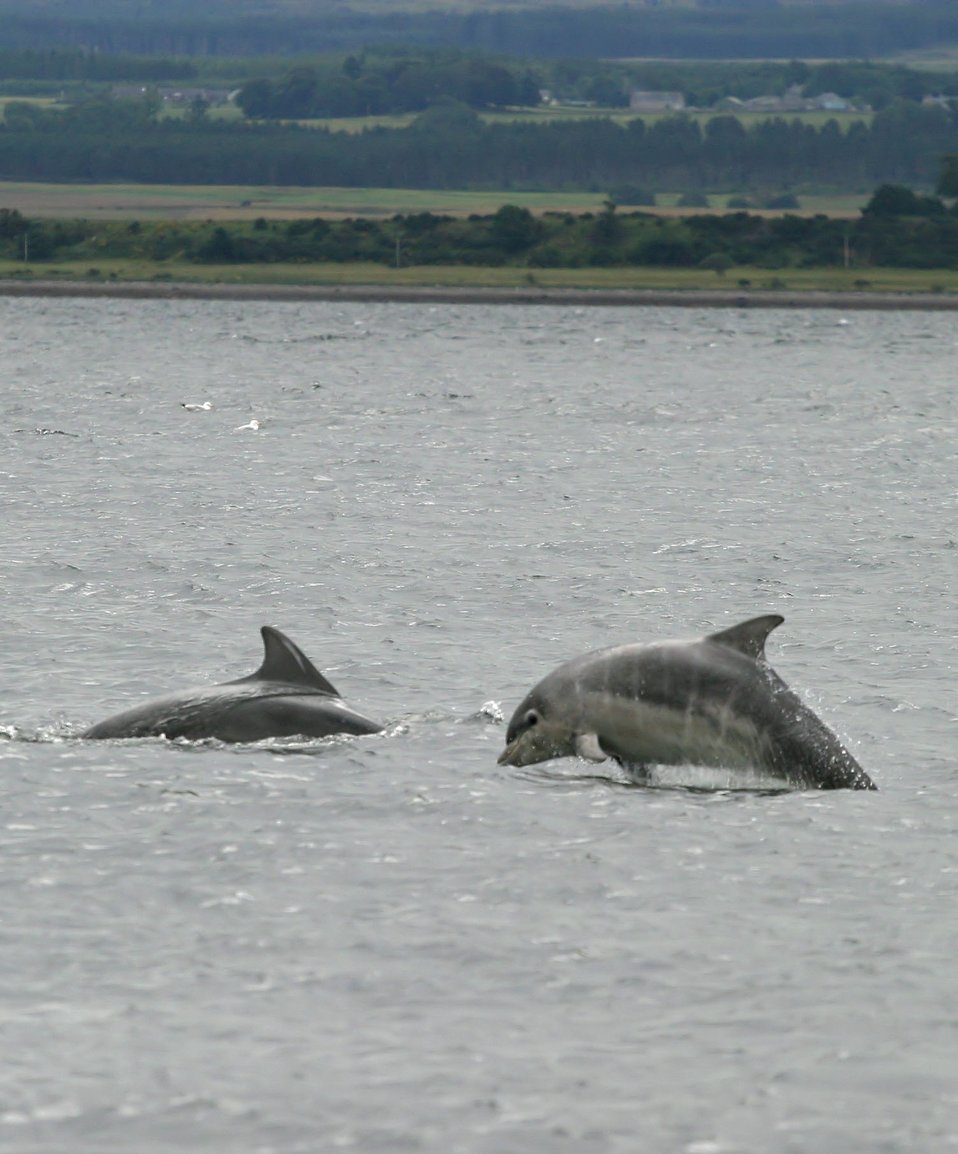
Baby bottlenose dolphin shannonry point 2006